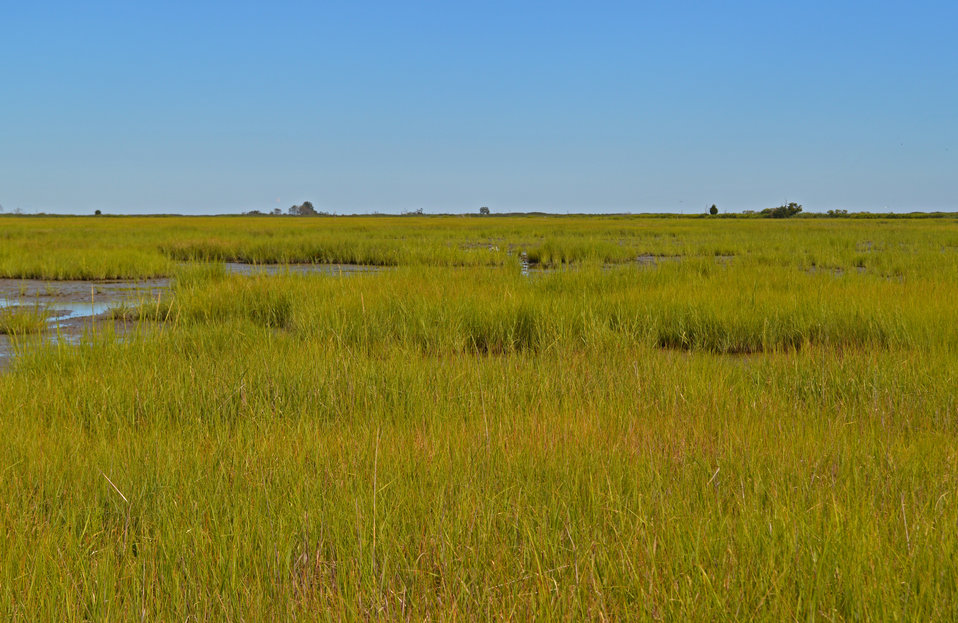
Back barrier salt marsh at Prime Hook National Wildlife Refuge.